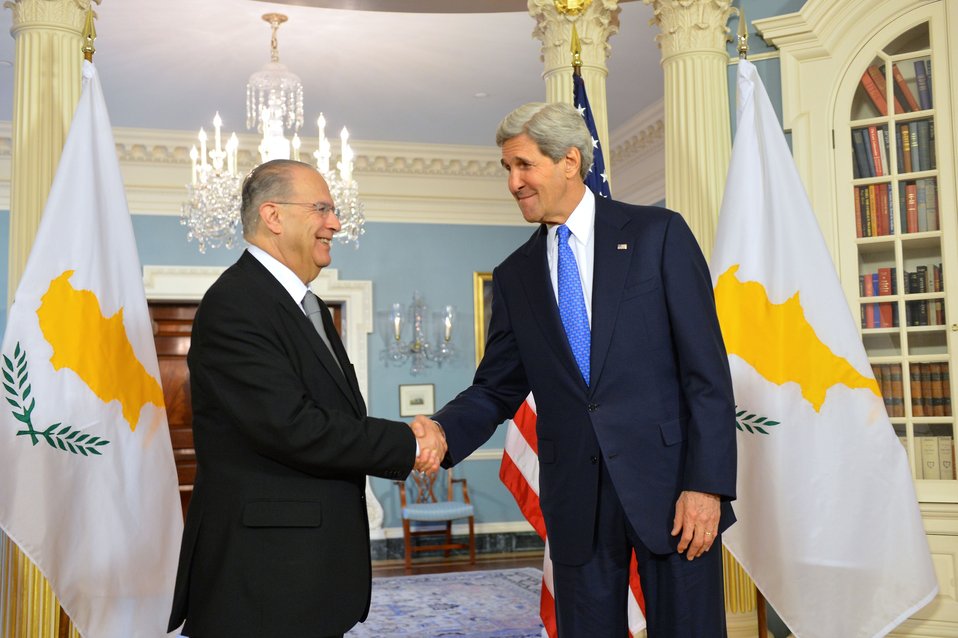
Secretary Kerry Shakes Hands With Cypriot Foreign Minister Kasoulides

U.S. Secretary of State John Kerry and Cypriot Foreign Minister Ioannis Kasoulides shake hands after addressing reporters at the U.S. Department of State in Washington, D.C., on May 13, 2014.